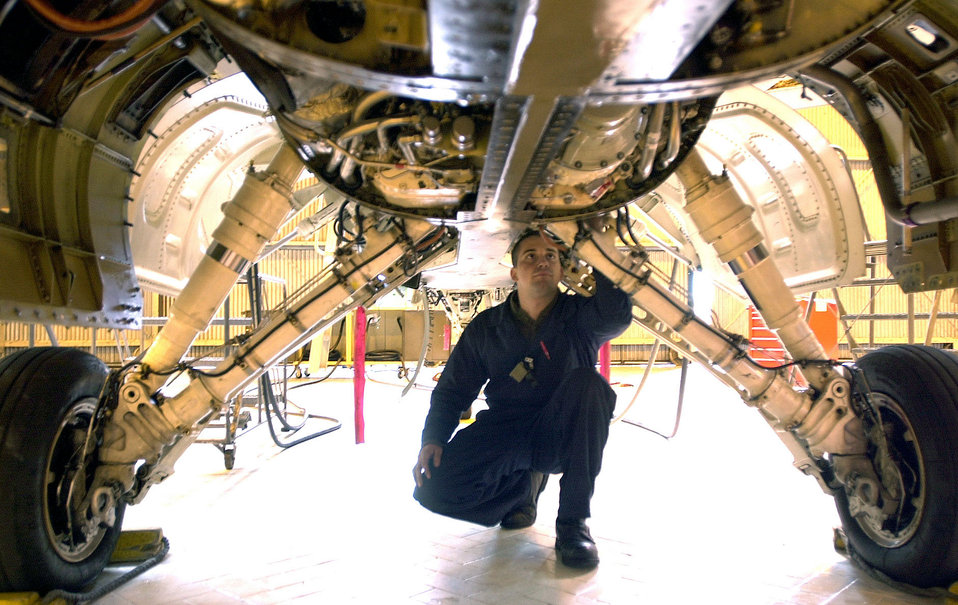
Falcon check up

AVIANO AIR BASE, Italy -- Airman 1st Class Randy Matos, Crew chief, 31st Aircraft Maintenance Squadron, inspects the aft section area of the engine bay of the F-16 Fighting Falcon during routine maintenance.